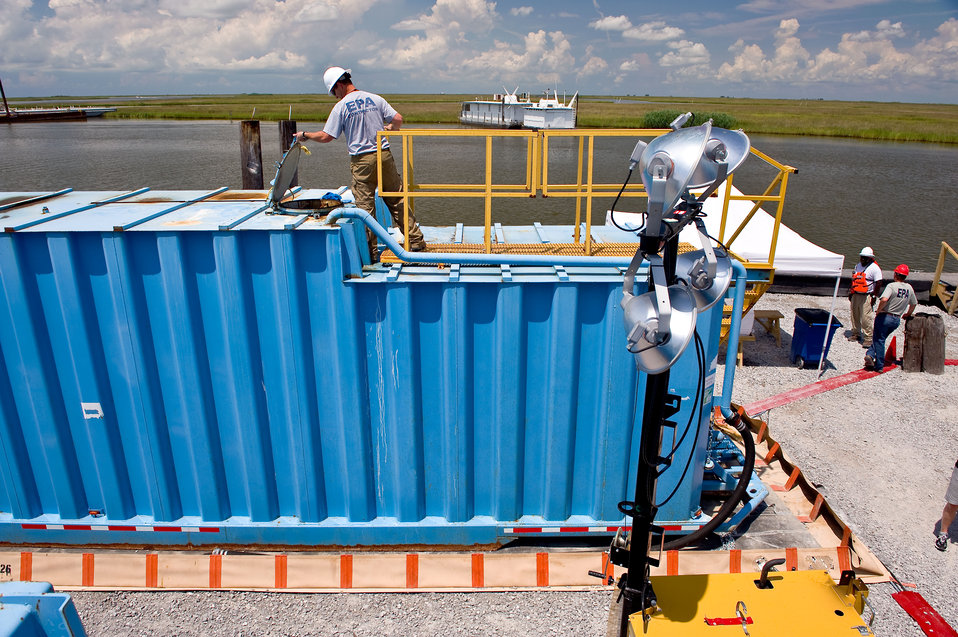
August 6, 'frack tanks' help oil and water separate

Fractionation tanks, also known as 'frack tanks', hold water and oil to help the natural seperation of the waste fluid for more efficient disposal.